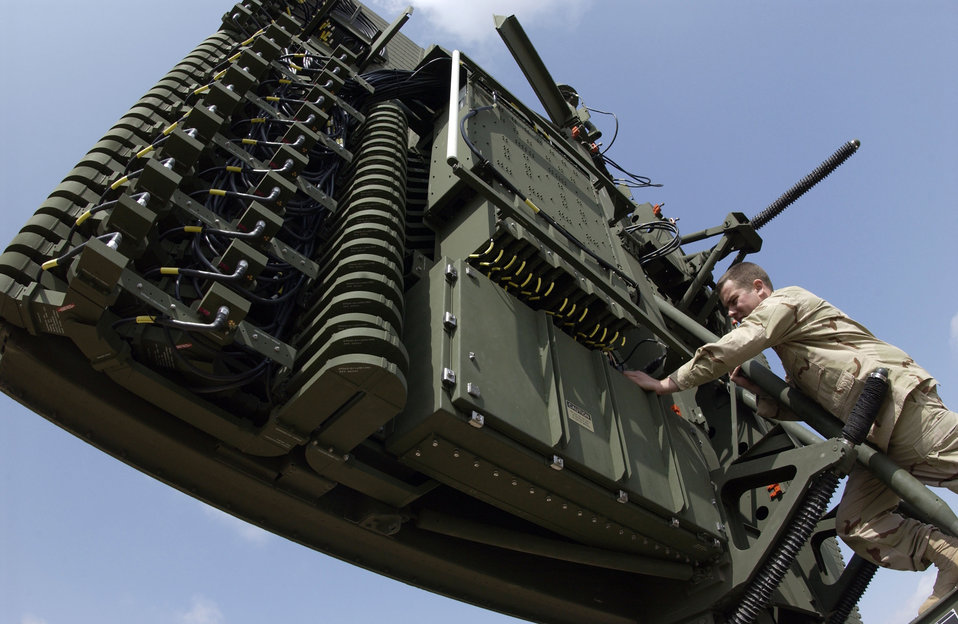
I can see you

Senior Airman Justin Wagner performs a periodic maintenance inspection on an AN/TPS-75 air surveillance radar Feb. 27 at Kirkuk Air Base, Iraq. The AN/TPS-75 allows air battle managers located at Balad AB, Iraq, to remotely see aircraft flying in northern Iraq. Airman Wagner is a ground radar systems techinician with the 727th Expeditionary Air Control Squadron.